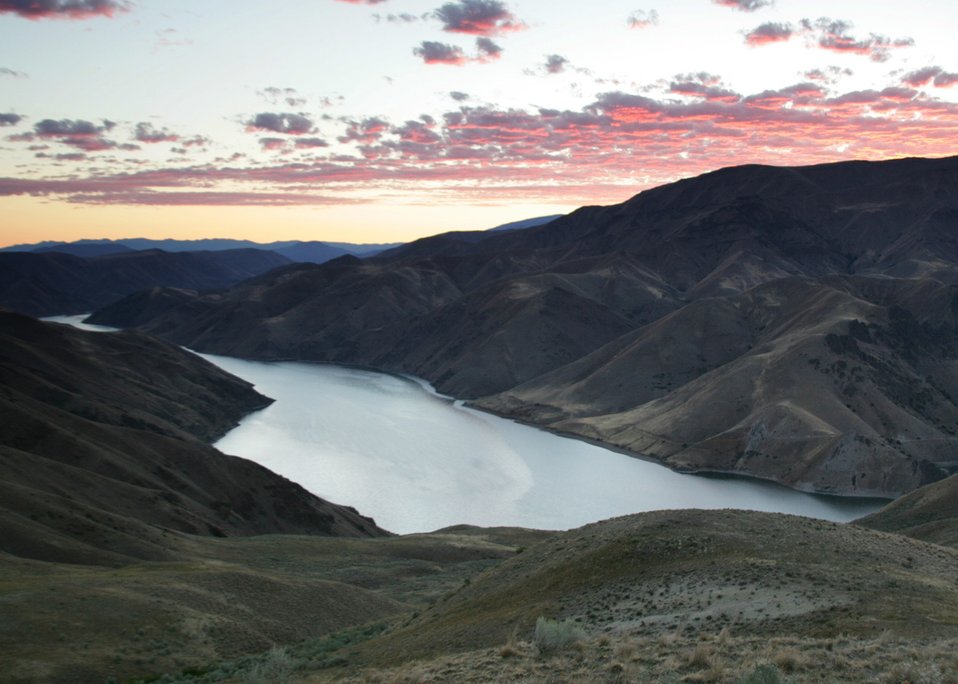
Sunrise on the Snake River Backcountry Byway.